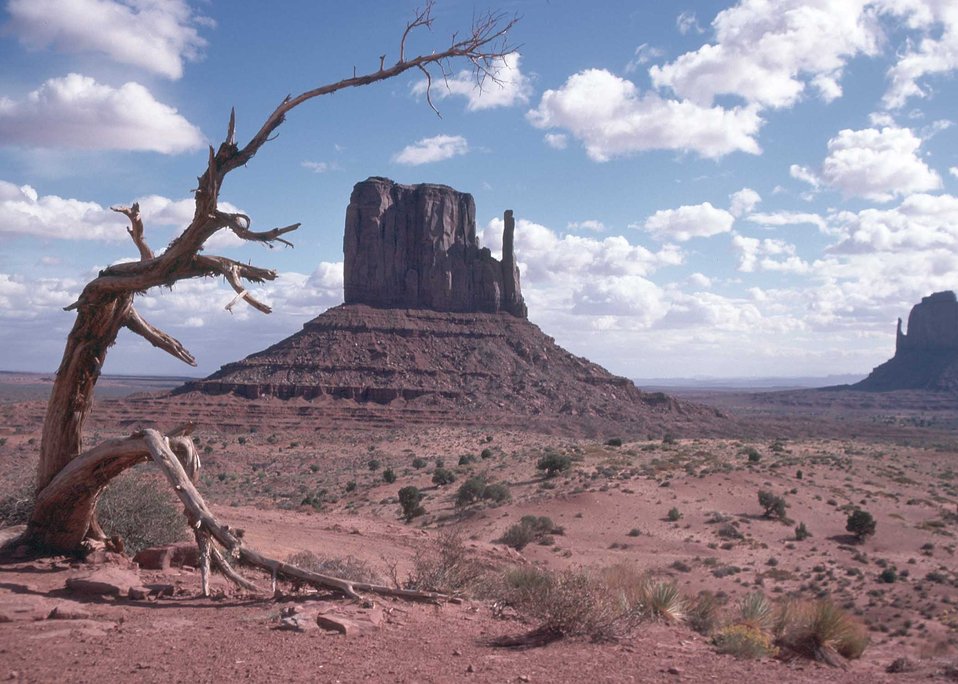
Sandstone mesas at Arizona's Monument Valley

Towering mesas of sandstone are formed by wind and water erosion in Arizona's Monument Valley.